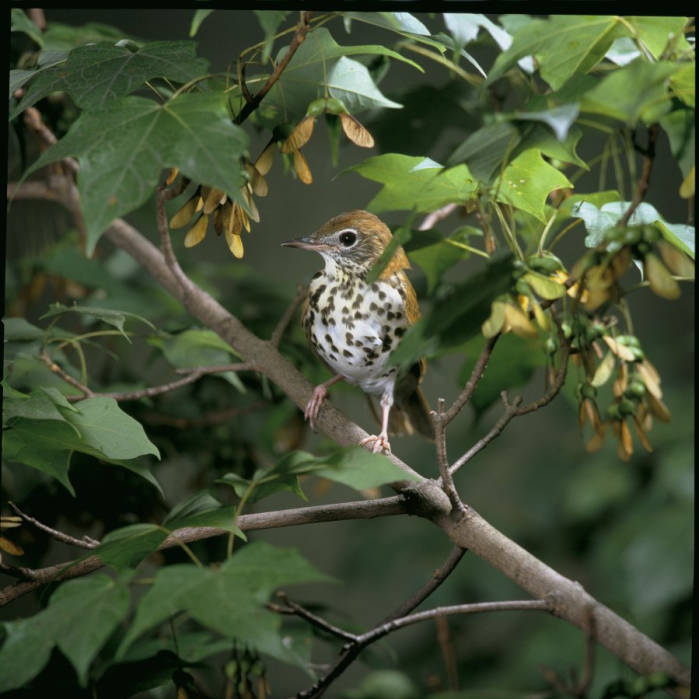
woodthrush